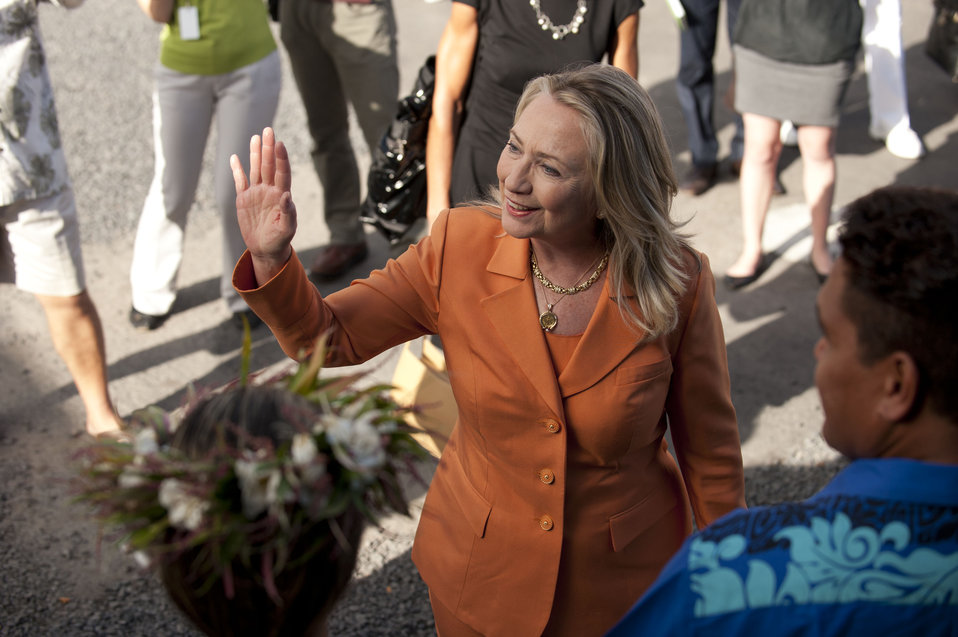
Secretary Clinton at the Pacific Islands Forum in the Cook Islands

U.S. Secretary of State Hillary Rodham Clinton waves at the Pacific Islands Forum in the Cook Islands, August 31, 2012.